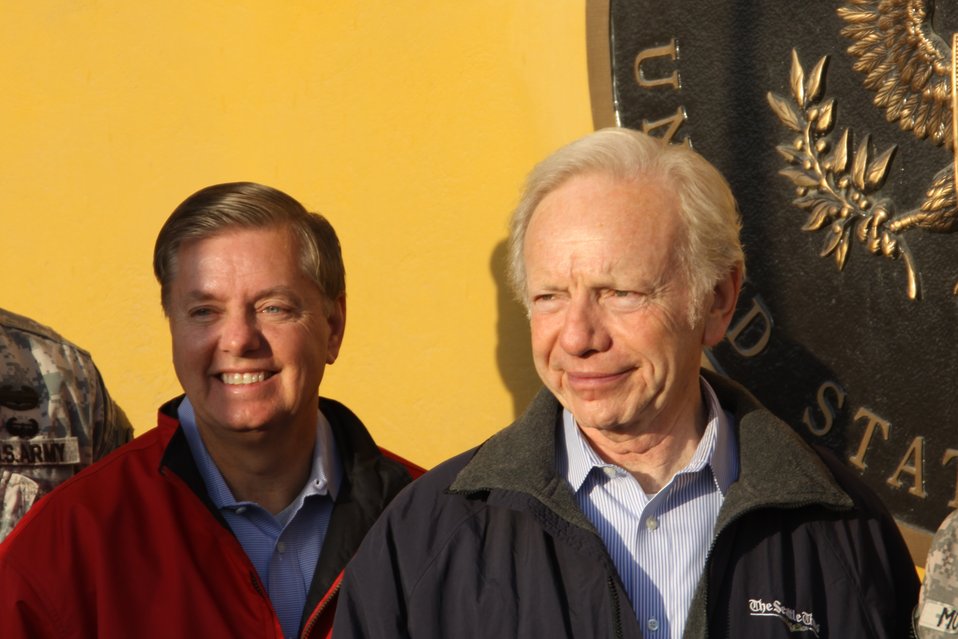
Senators Graham and Lieberman